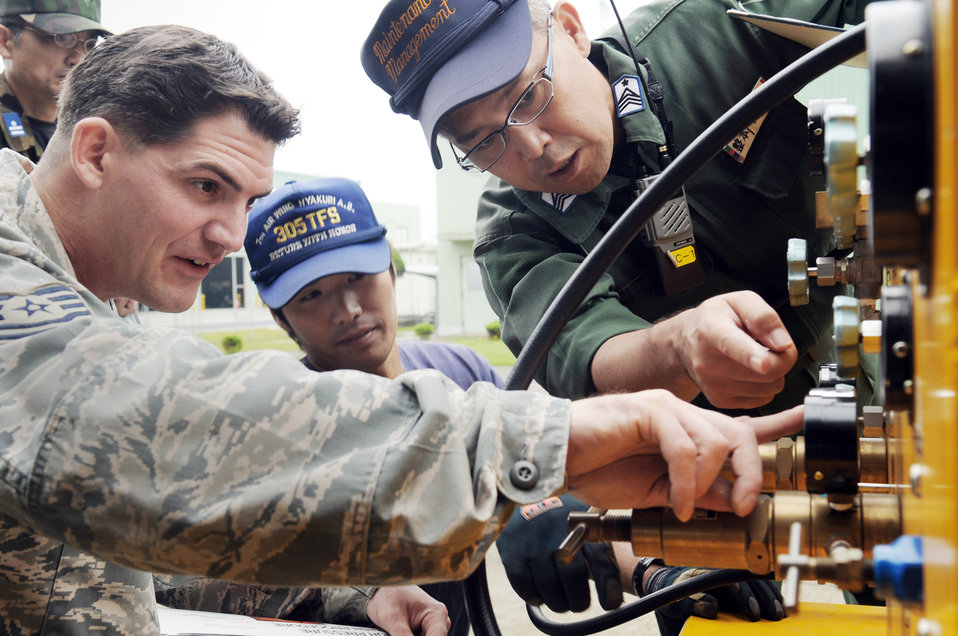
Kadena maintainers train on Japanese equipment during exercise

Tech. Sgt. Kevin Charrier receives training from Japan Air Self Defense Force members on aerospace ground equipment they will use during their Oct. 3, 2009, visit to Hyakuri Air Base, Japan. The visit is part of an aviation training relocation exercise between Kadena AB, Okinawa and Japan Air Self Defense Force members. Sergeant Charrier is an expeditor with the 67th Aircraft Maintenance Unit from Kadena Air Base, Japan.